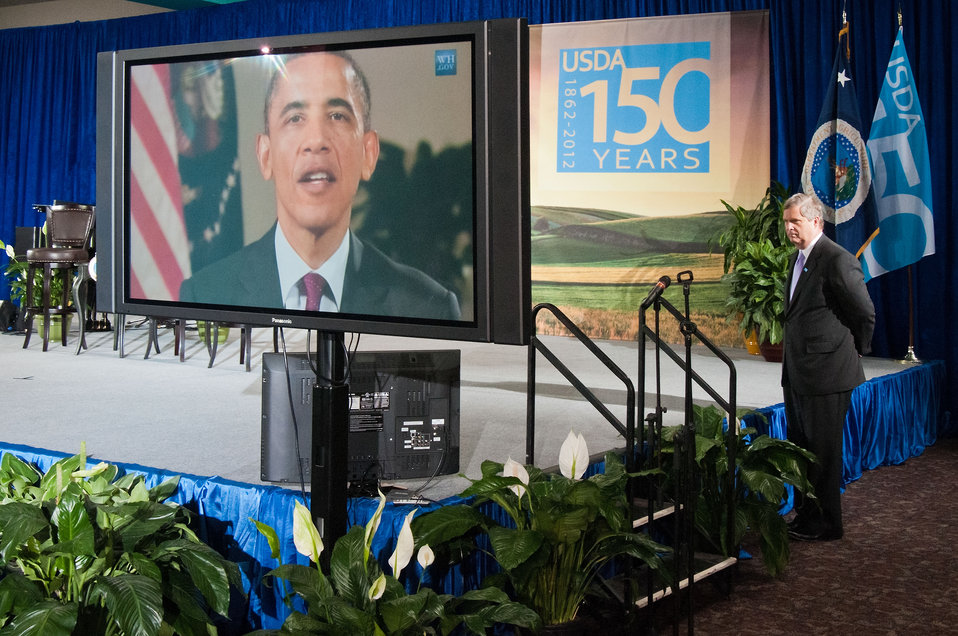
Agriculture Secretary Tom Vilsack views a video statement by President Barack Obama at the United States Department of Agriculture's 150th Anniversary celebration in Washington, D.C., on Tuesday, May 15, 2012. On May 15, 1862 President Abraham Lincoln signed into law on Saint Isador’s Day, The Patron saint of Farmers, an act of Congress establishing the U.S. Department of Agriculture. President Lincoln referred to the Agriculture Department as the “People’s Department”. He knew the importance of agriculture to our prosperity – particularly at a time when about half of all Americans lived on the farm.